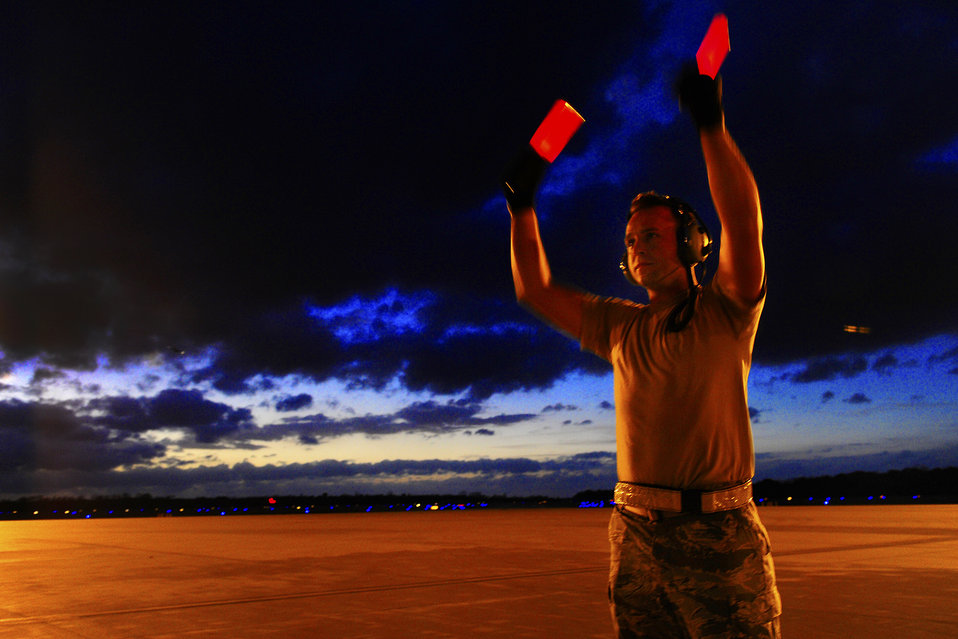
Follow the glowing lights

Senior Airman Jeremy Kaser marshals a C-17 Globemaster III during a large formation exercise Dec. 15, 2010, at Fort Polk, La. Airman Kaser is a crew chief with the 437th Aircraft Maintenance Squadron at Joint Base Charleston, S.C. Airmen from JB Charleston and Soldiers assigned to the Joint Readiness Training Center at Fort Polk conducted aerial operations.